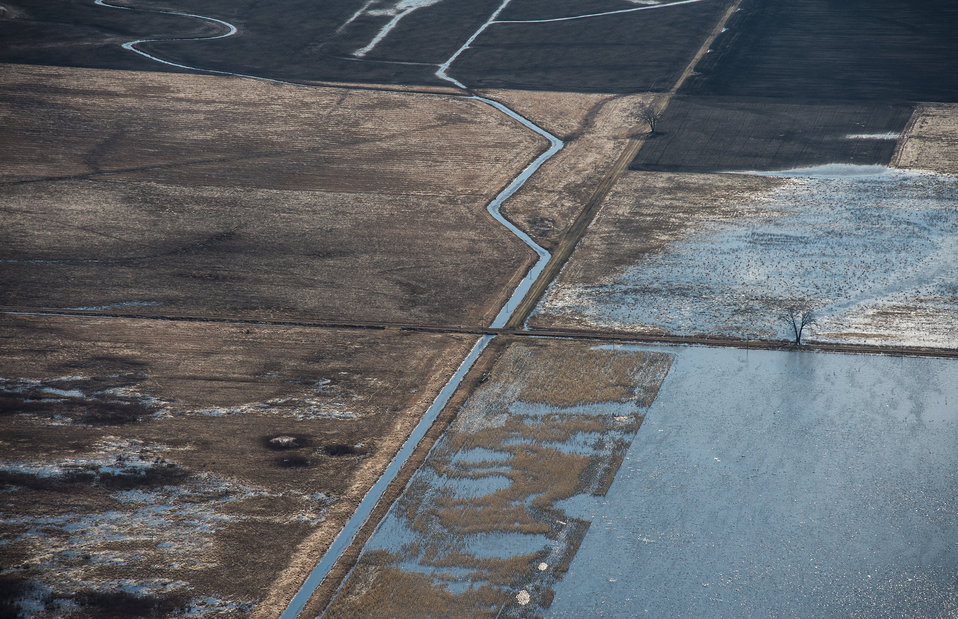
Ehlert U.S. Department of Agriculture (USDA) Natural Resources Conservation Service (NRCS) Wetland Reserve Program (WRP) in Wilkin County, MN, on Tuesday, April 30, 2013. For information about this and other programs from the USDA Red River Basin Initiative (RRBI) please see www.mn.nrcs.usda.gov/news/features13/RRBI.html.